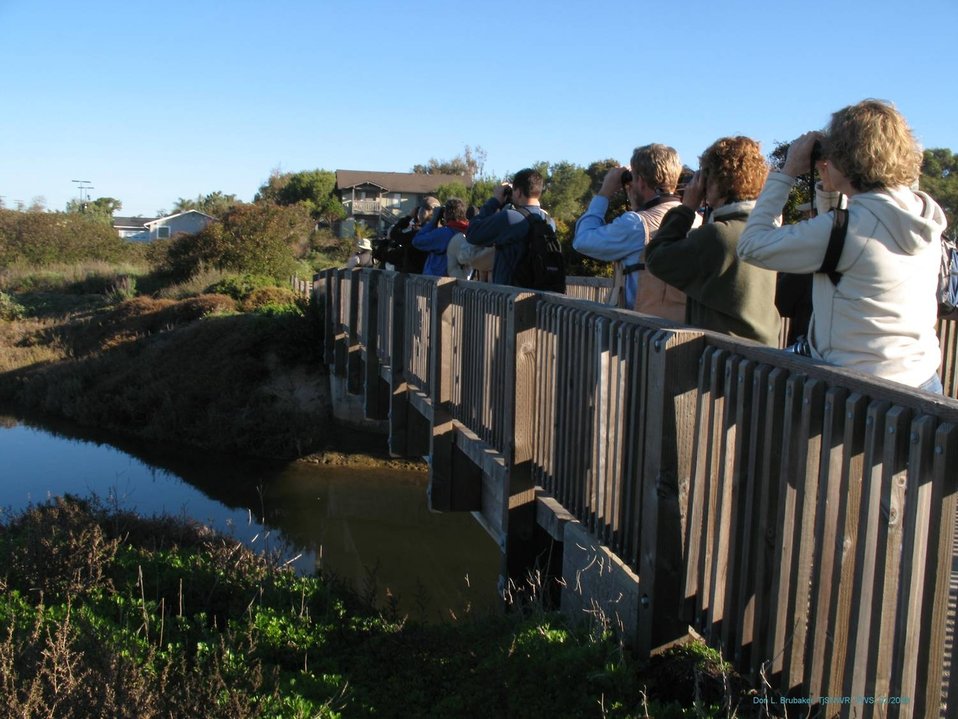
Tijuana Slough NWR birding

Birders sight a clapper rail at Tijuana Slough National Wildlife Refuge in California.